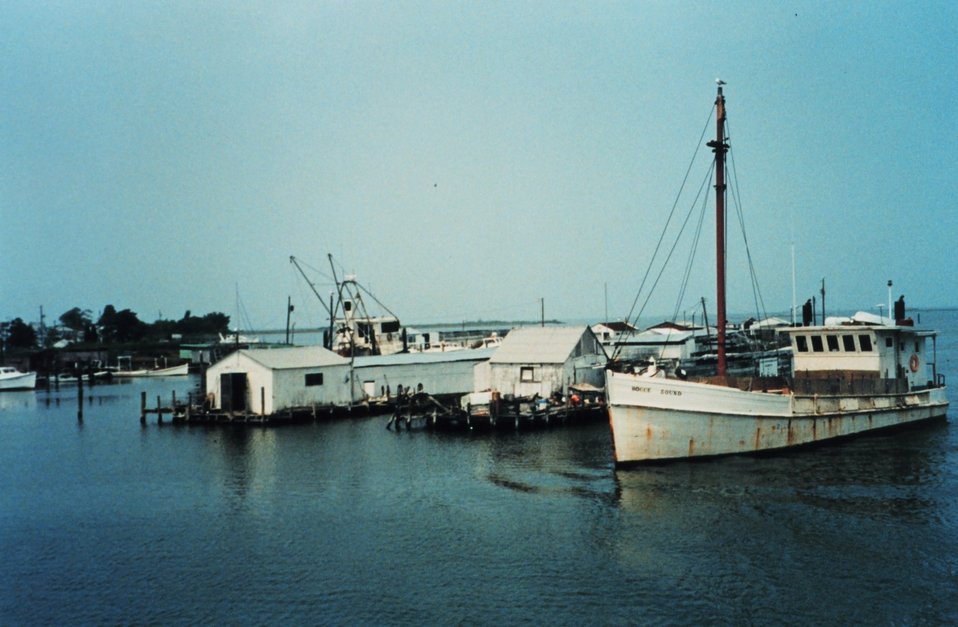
Fishing boats in the harbor at Smith Island